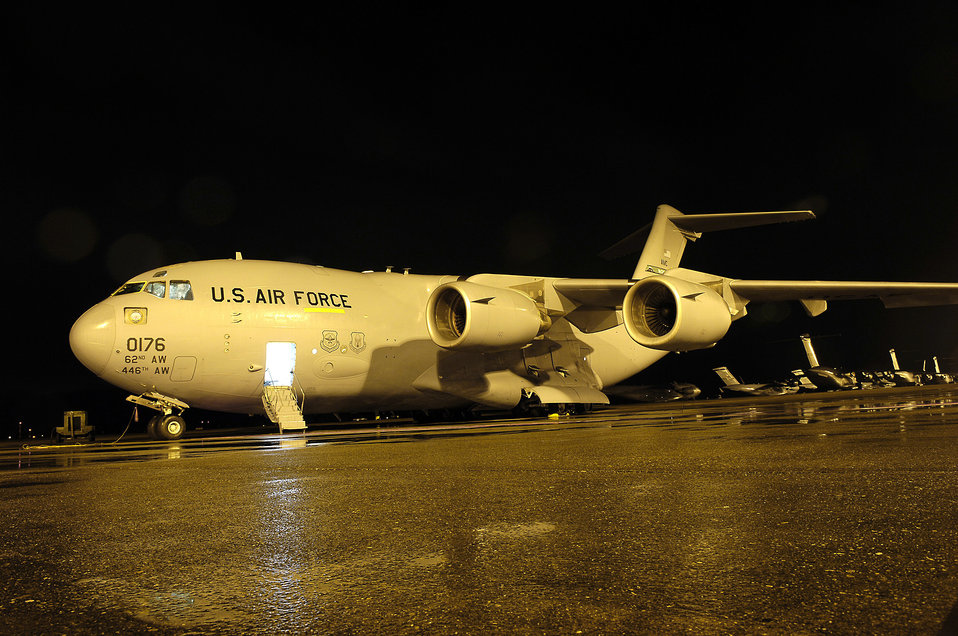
July 26 airpower summary: C-17s help sustain operations

The C-17 Globemaster III performs tactical airlift and airdrop missions, transports passengers, delivers troop resupply and all types of cargo throughout Southwest Asia in support of operations Enduring Freedom and Iraqi Freedom.